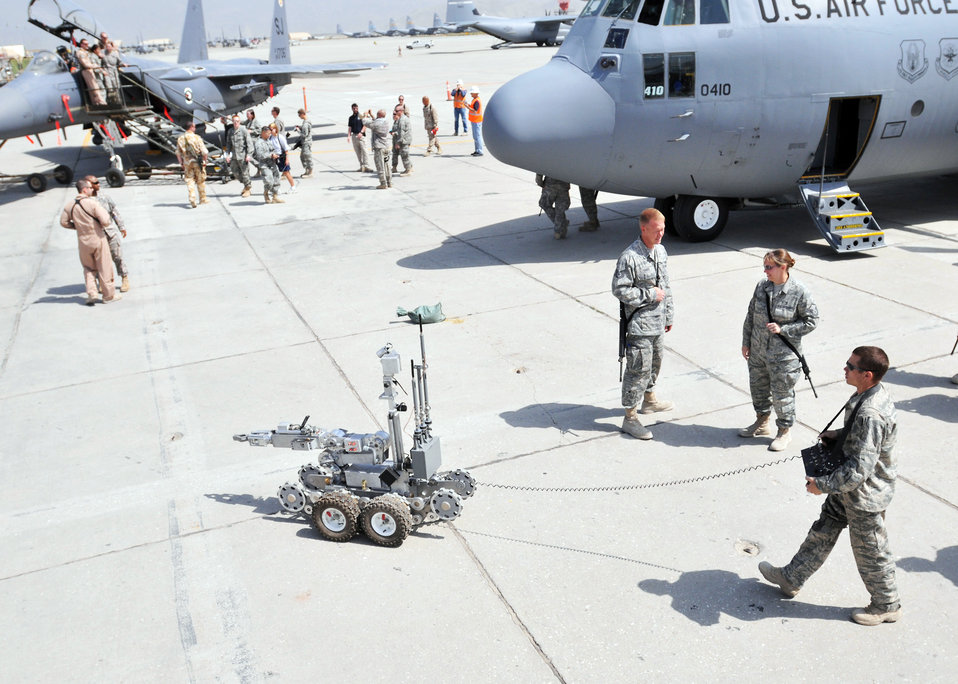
Warfighters take time for Air Force's 62nd birthday

Staff Sgt. Ryan Oliver demonstrates the capabilities of their robot for a crowd at an open house ceremony in honor of the Air Force's 62nd birthday Sept. 18, 2009, at Bagram Airfield, Afghanistan. Sergeant Oliver is an explosive ordnance disposal team leader from the 755th Air Expeditionary Group.